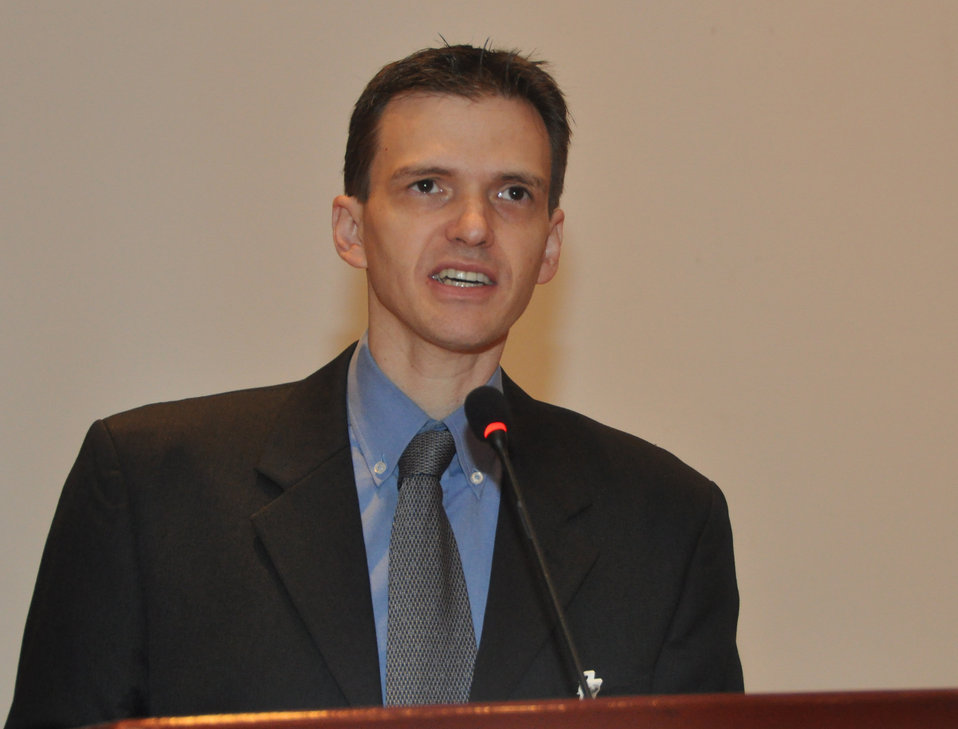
Patrick Smith, USAID/Vietnam Climate Change Advisor